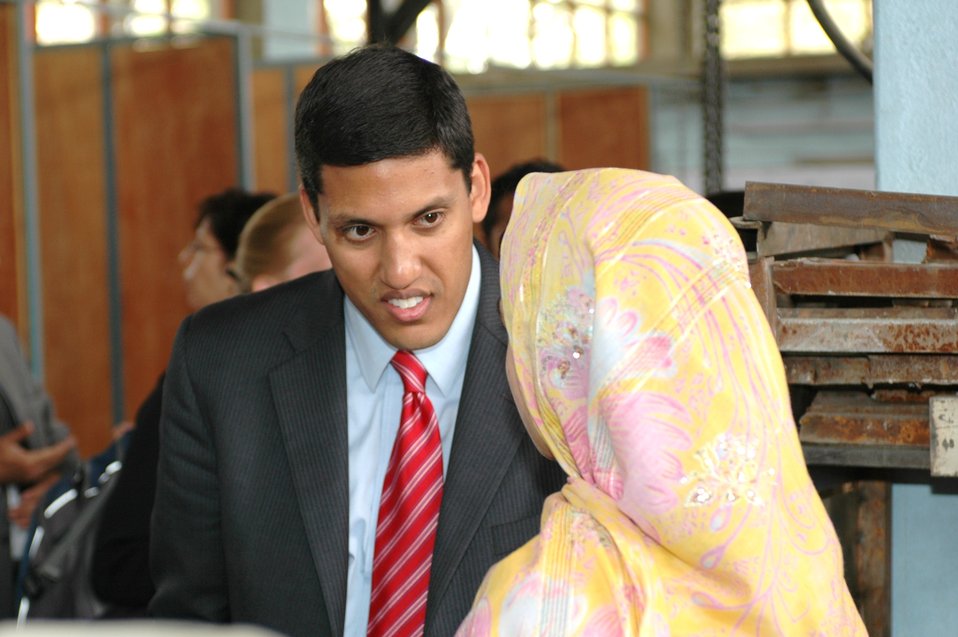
Dr Shah Visits Votech in Kabul